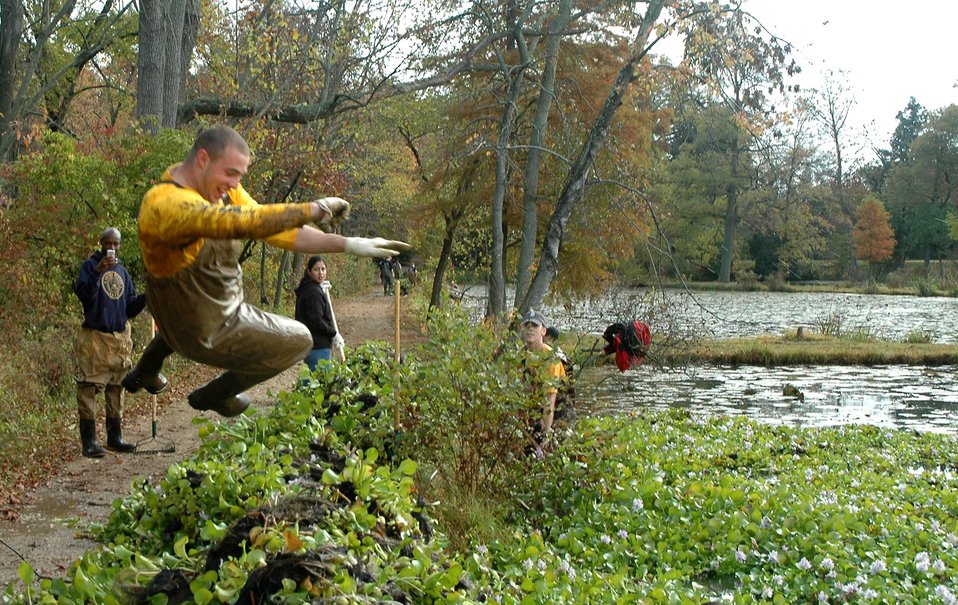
Servicemembers make a difference

A Navy ceremonial guardsman dives into a pile of water lettuce Oct. 25 at Kenilworth Aquatic Garden in Washington, D.C. One hundred and seventy-six servicemembers from the Air Force District of Washington, Naval District of Washington and Military District of Washington spent four hours at the garden winterizing the park as part of a joint service project for national